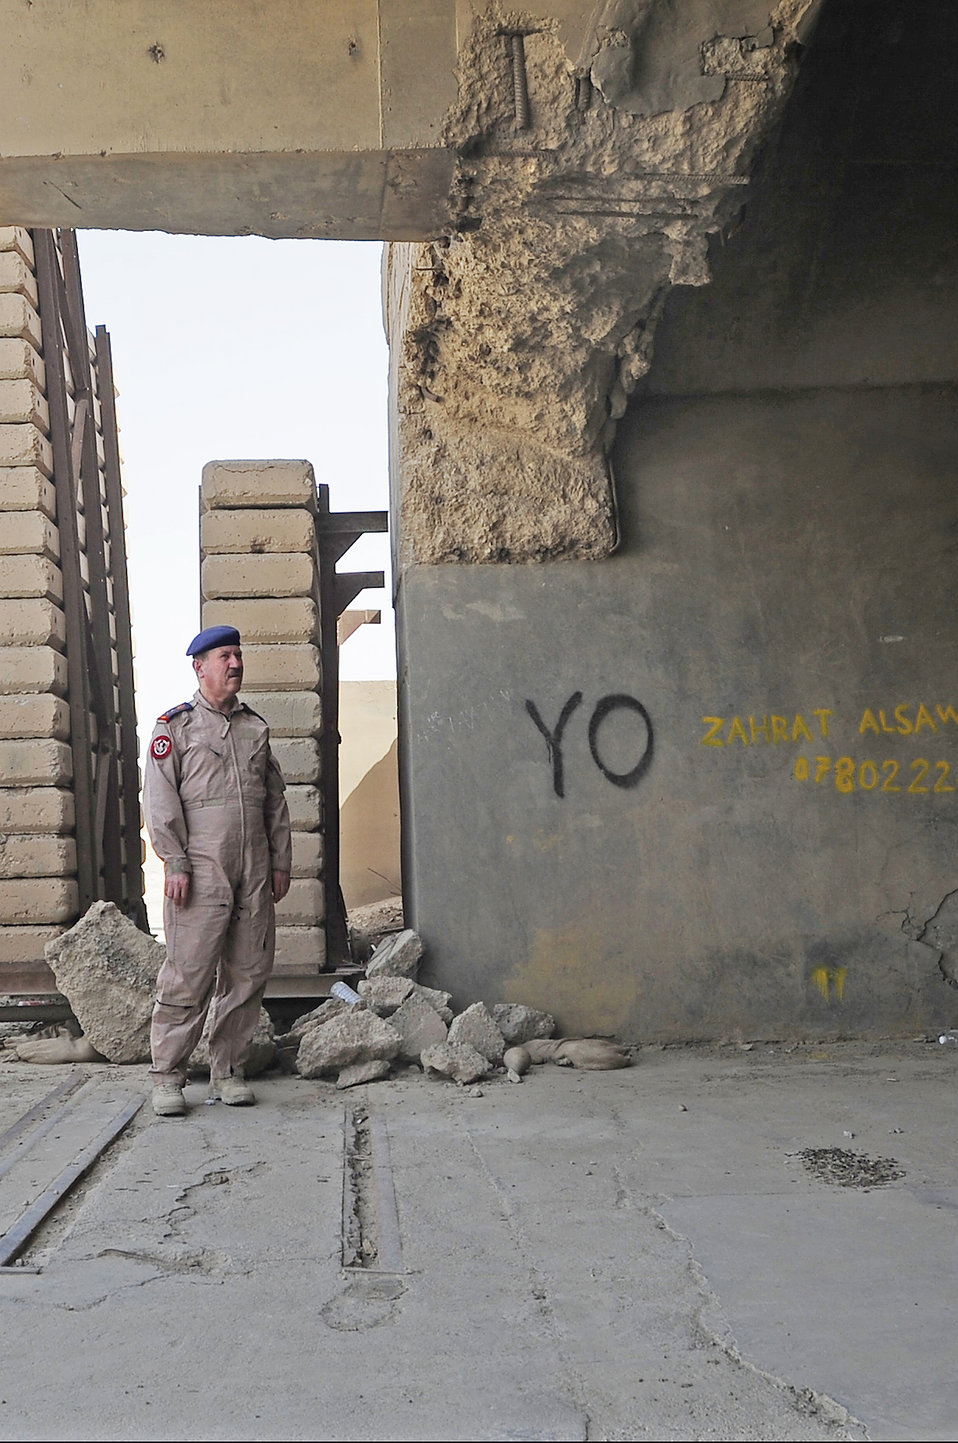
Iraqi, U.S. Air Force work hand in hand to support drawdown of forces

Iraqi air force Commander Staff Lt. Gen. Anwar Hamad Amen Ahmed surveys an aircraft hangar that is in need of repair during his visit Sept. 24, 2009, at Ali Base, Iraq. The visit by General Anwar to Ali Base marked a significant step in providing the Iraqi air force with a better understanding of what assets will be available to support them here when the base is transitioned to government of Iraq.